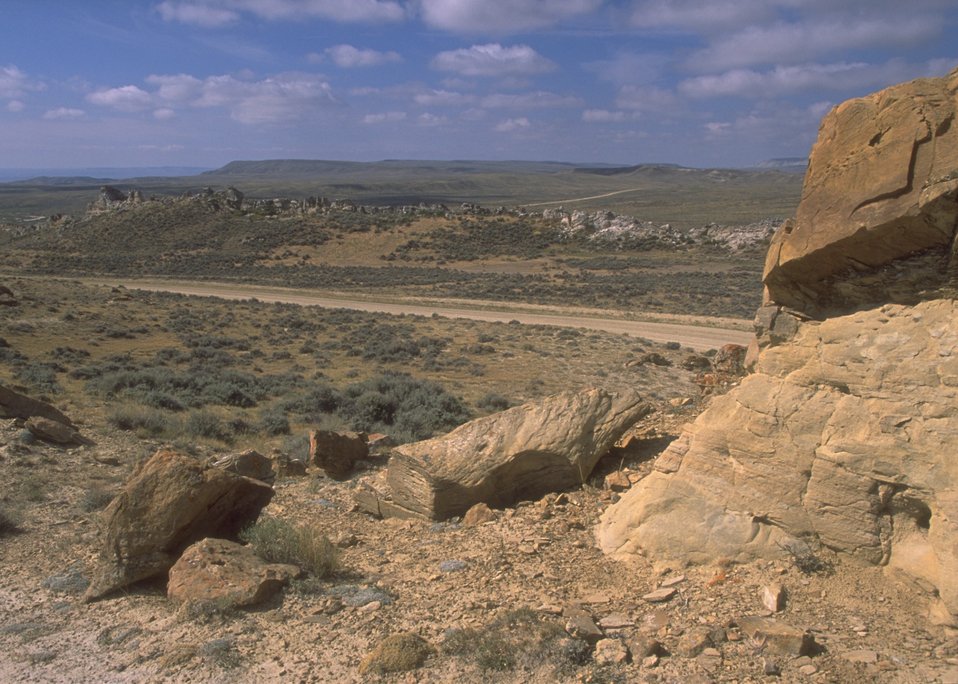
Rock Avenue area along the Oregon Trail, Casper Field Office.